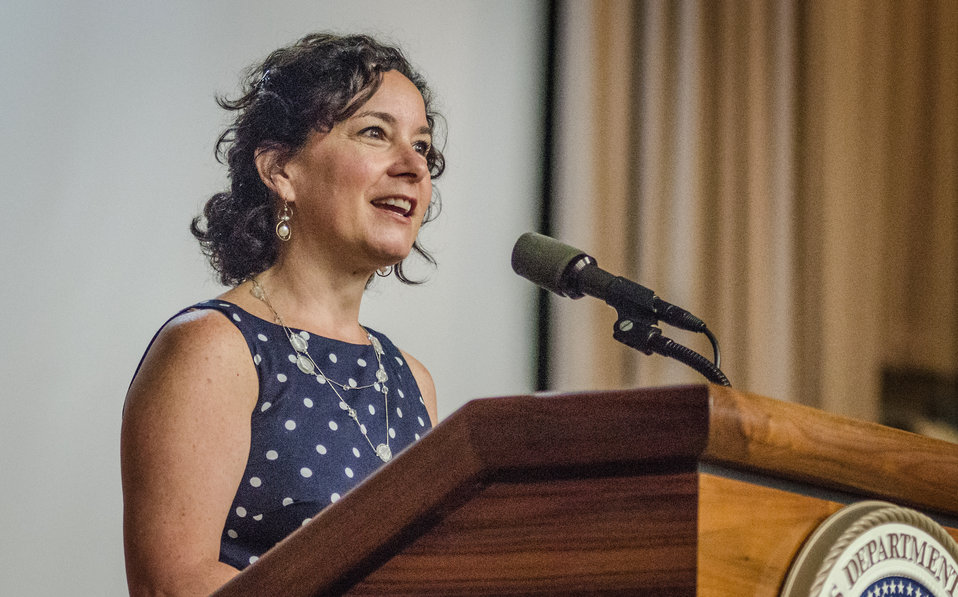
U.S. Department of Agriculture (USDA) Rural Development (RD) Deputy Under Secretary Patrice Kunech speaks at the USDA’s RD 2nd Annual Cultural Transformation kickoff opening ceremony and forums, themed “Employees Influencing Change,” on Tuesday, Aug. 13, 2013 USDA in Washington, D.C.